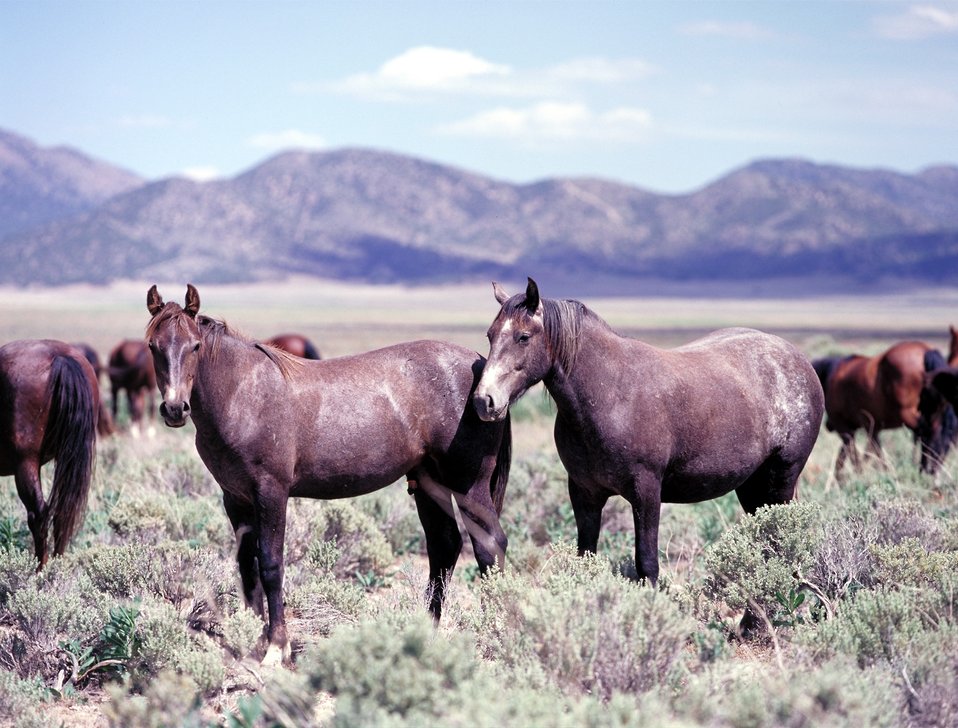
Onaqui Herd near Dugway, Utah.